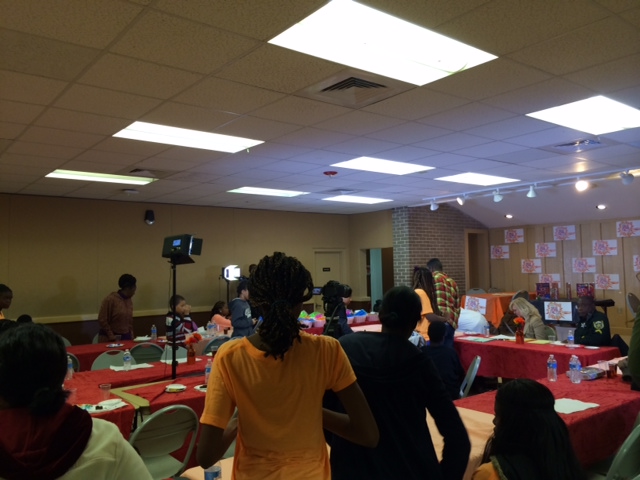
NDFW in Florida

Folks from Orlando, Florida are 'Shattering the Myths' during the 2014 National Drug Facts Week at Orlo Vista Park.